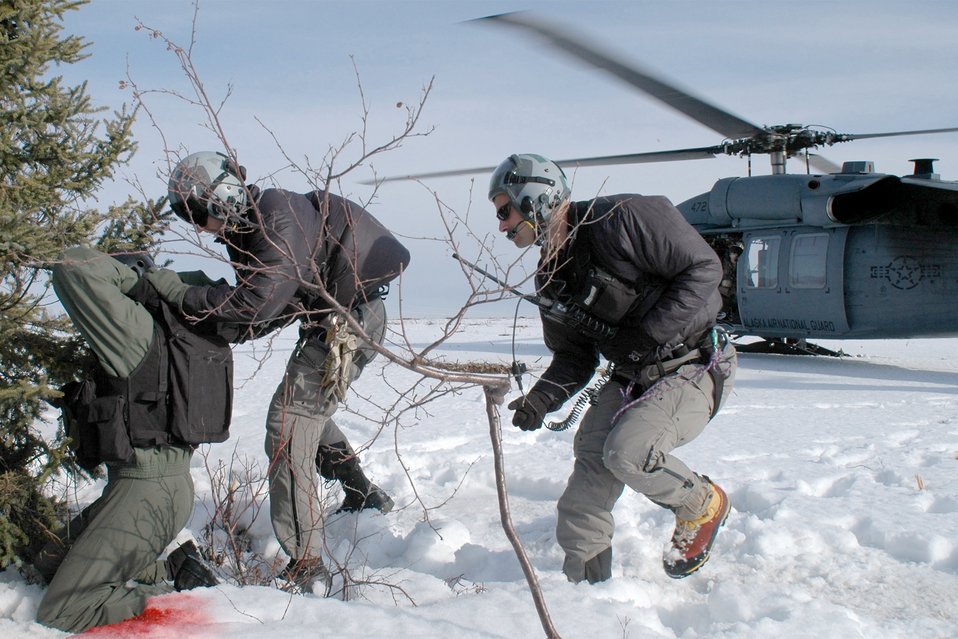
Red Flag-Alaska

Capt. Ryan Pumford is